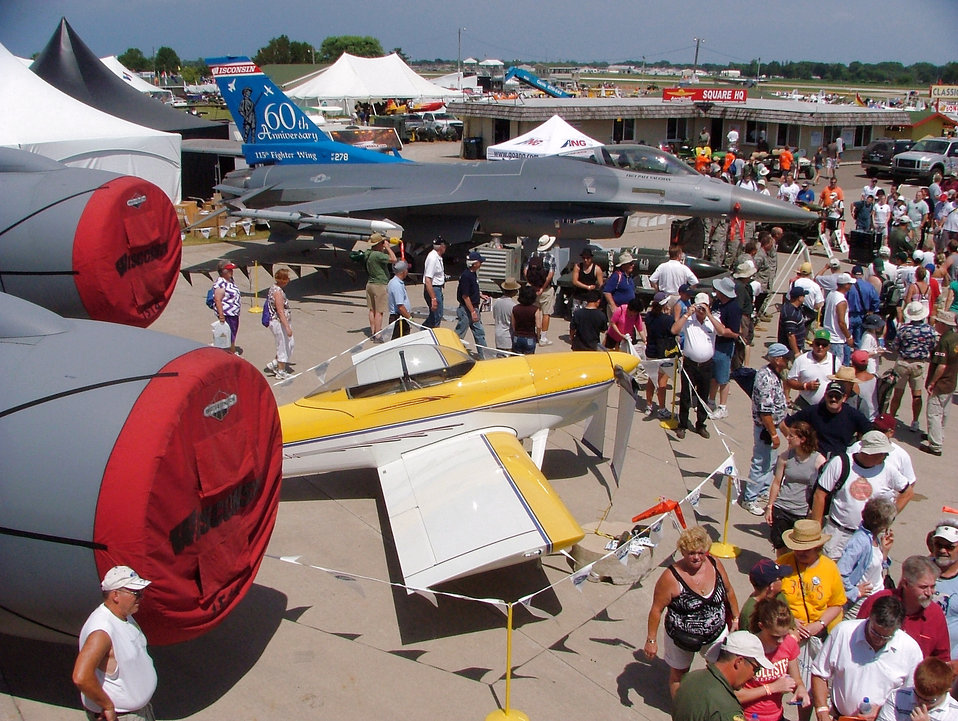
Flight safety

An F-16 Fighting Falcon, as well as six other Air Force aircraft, is on display at the Experimental Aircraft Association's Oshkosh Air Venture airshow in Oshkosh, Wis. More than 540,000 civilians and military pilots from around the globe gathered July 31 through Aug. 3 for the event. The yellow and white aircraft sitting beside the F-16 is a home-built experimental RV-4.